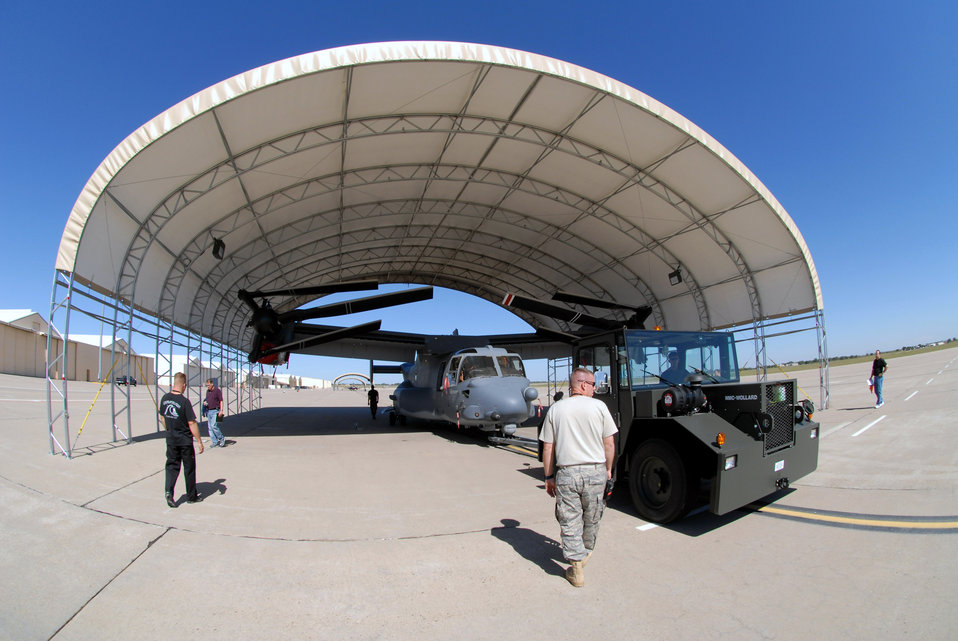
'Fit' to fight

Airmen check the fit of a CV-22 Osprey in a flightline sun shelter Sept. 25 at Cannon Air Force Base, N.M. Cannon AFB will be transferred from Air Combat Command to Air Force Special Operations Command Oct. 1. CV-22s are among the special operations aircraft to be assigned to the 27th Special Operations Wing at Cannon AFB. The wing, formerly designated the 27th Fighter Wing, operated F-16 Fighting Falcons at the base from 1995 to 2007.